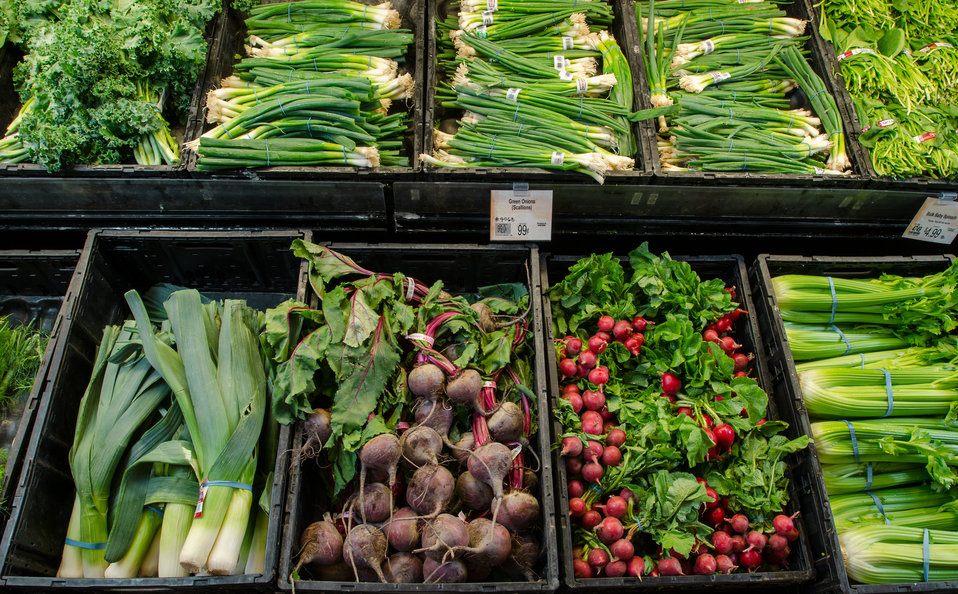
Leafy green produce at a grocery store in Fairfax, Virginia, on March 3, 2011.